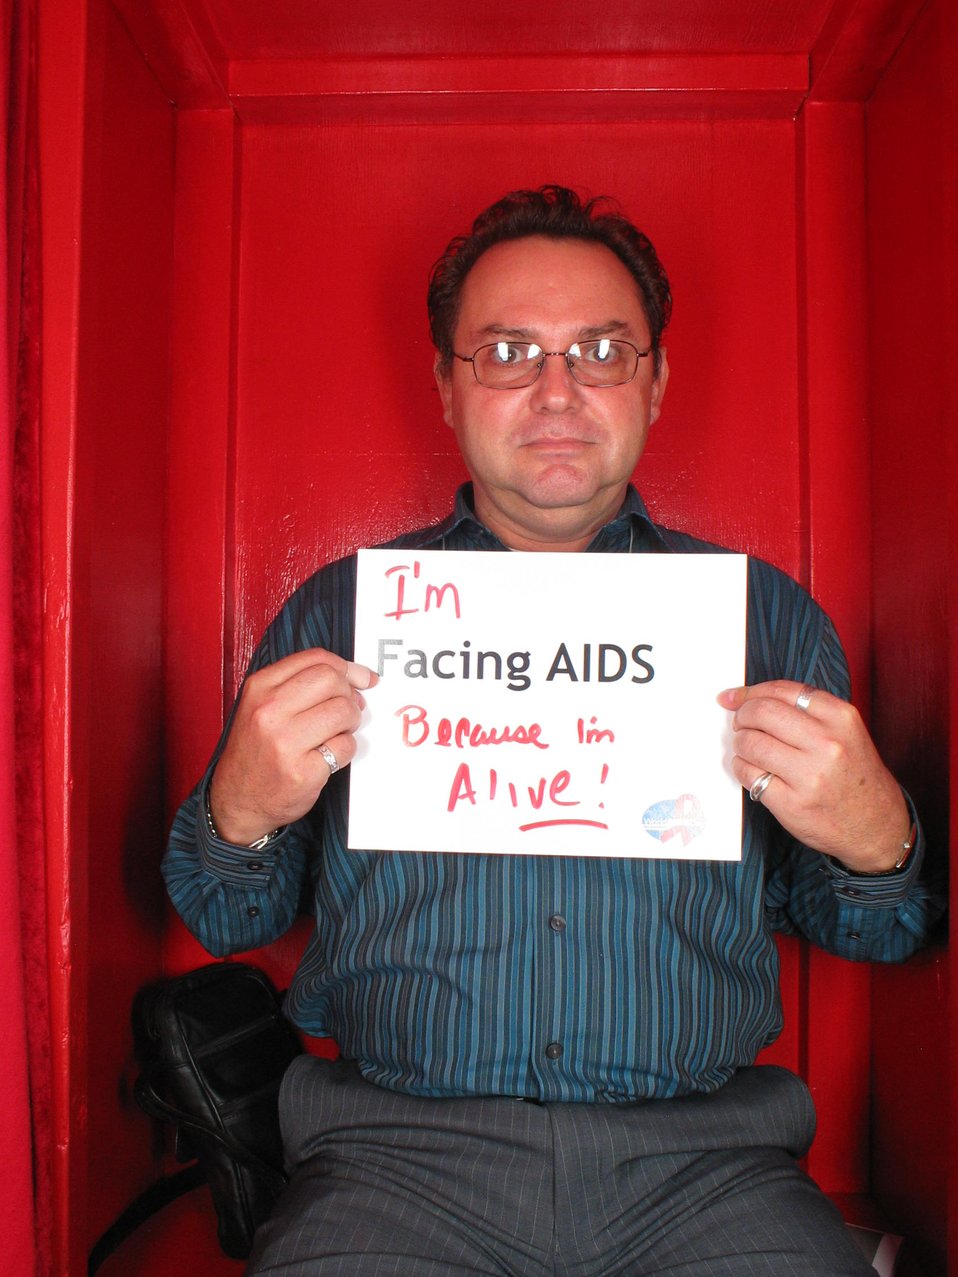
I'm Facing AIDS because I'm alive.